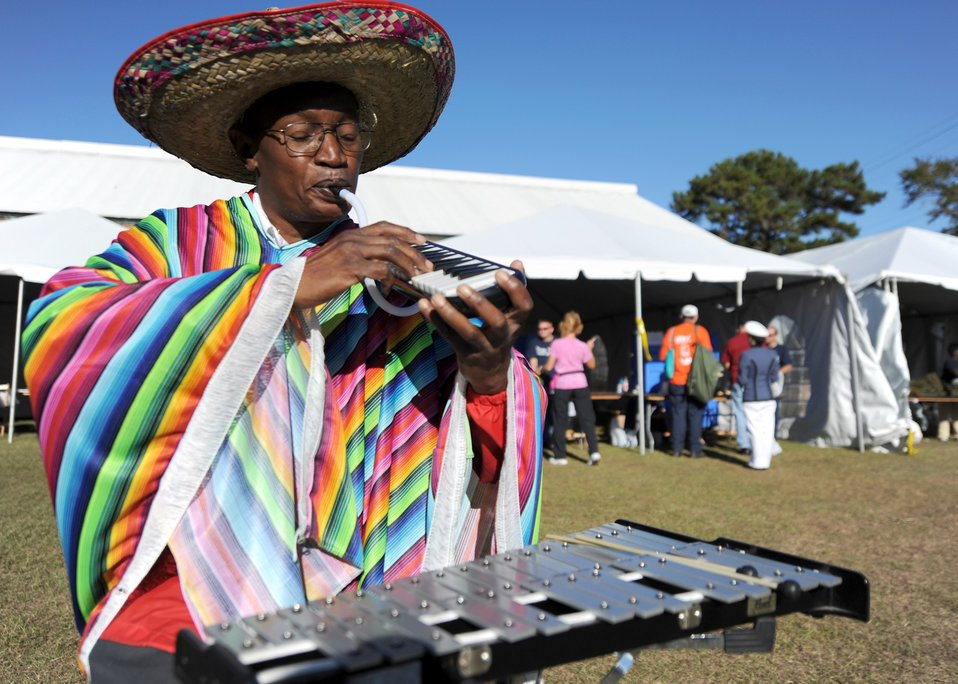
Local 'Stand down' serves homeless veterans

Clarence McDonald performs live gospel music as a member of the